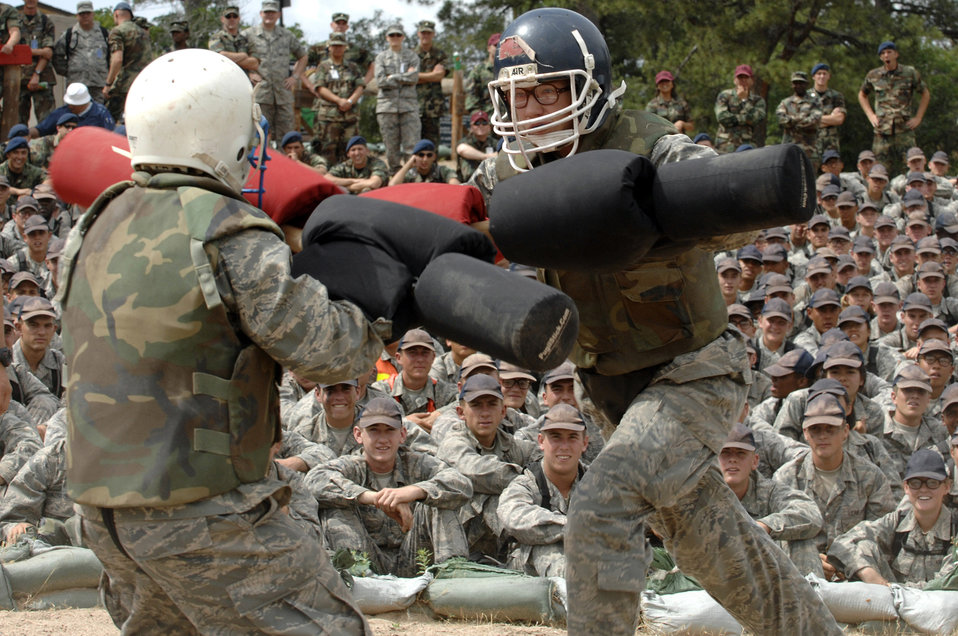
Big Bad Basic

U.S. Air Force Academy basic cadet Bethany Blackburn (right)